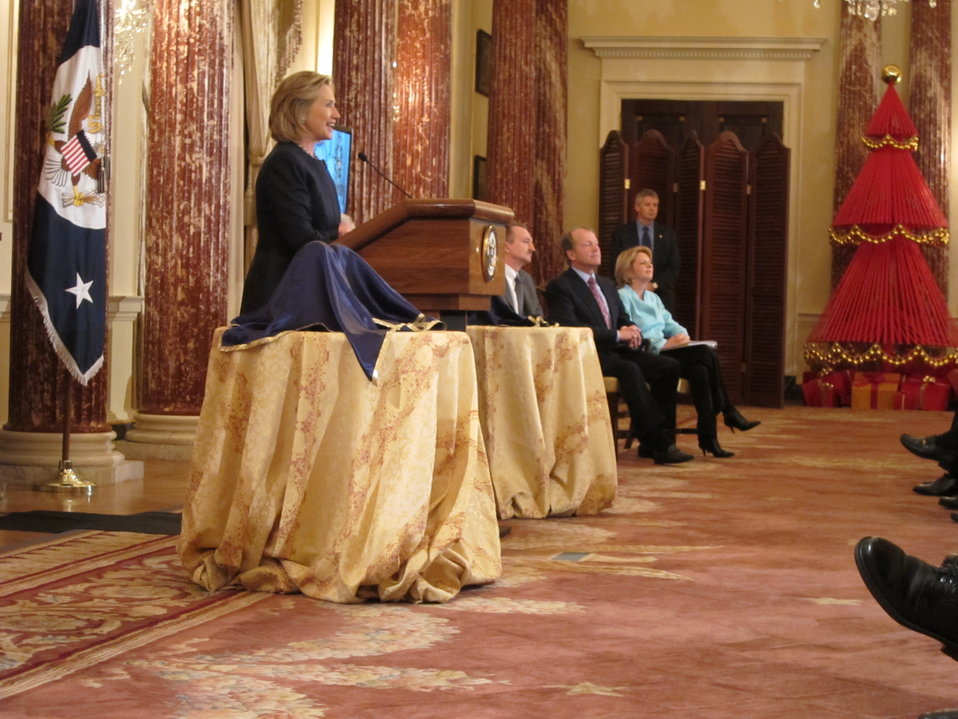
Secretary Clinton Delivers Remarks at the ACE Award Ceremony

U.S. Secretary of State Hillary Rodham Clinton delivers remarks at the Secretary's Award for Corporate Excellence (ACE) ceremony at the U.S. Department of State in Washington, D.C., on December 17, 2010.